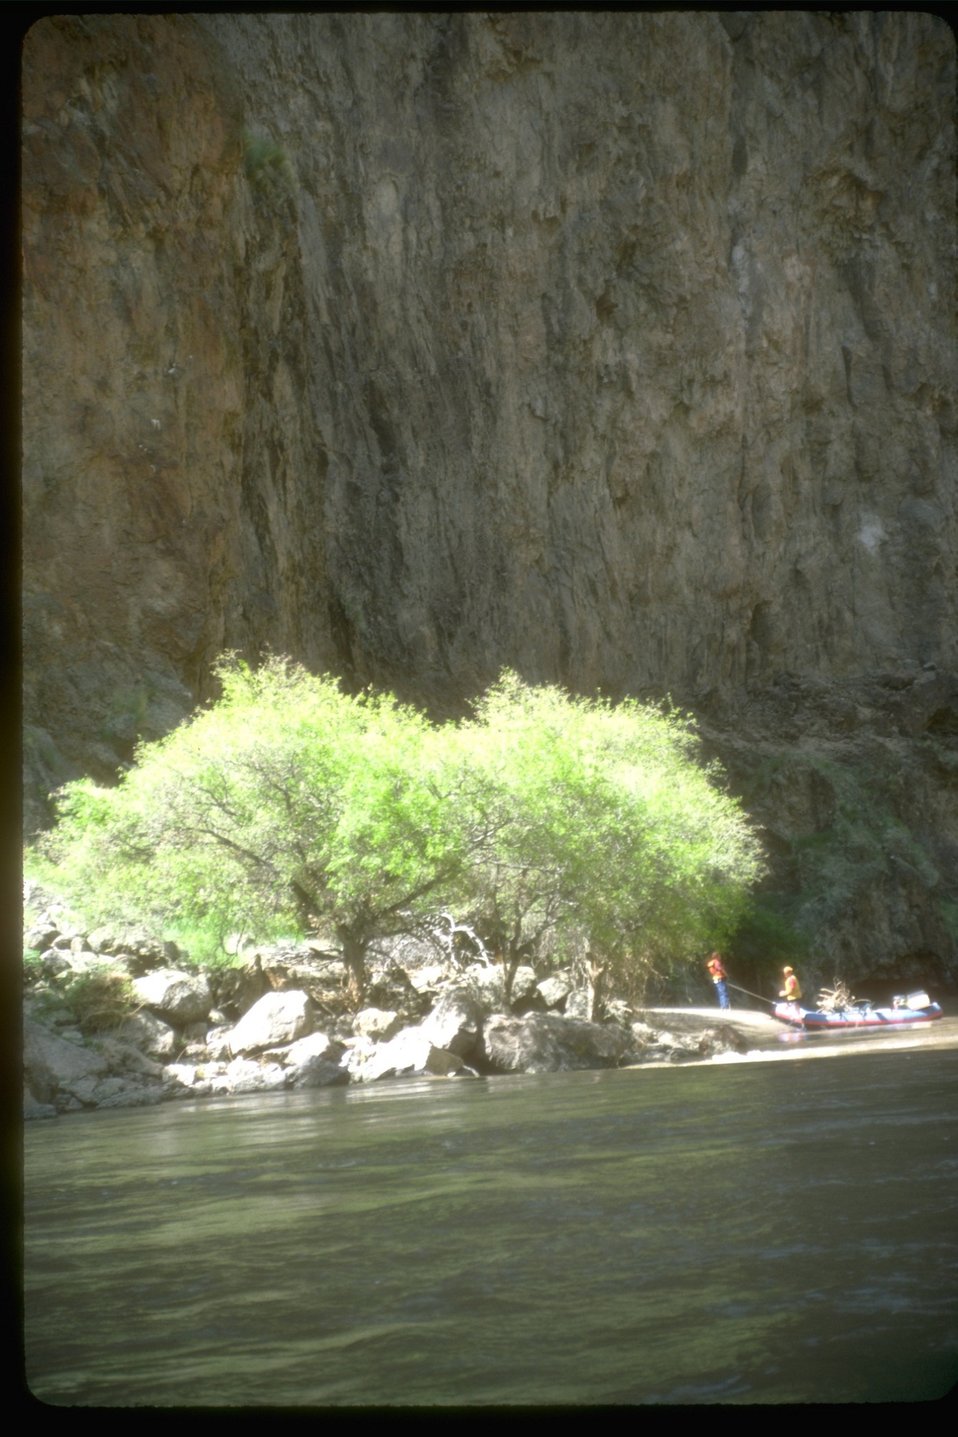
Whitewater Rafting in the Owyhee River. Canyon cliffs in the background.